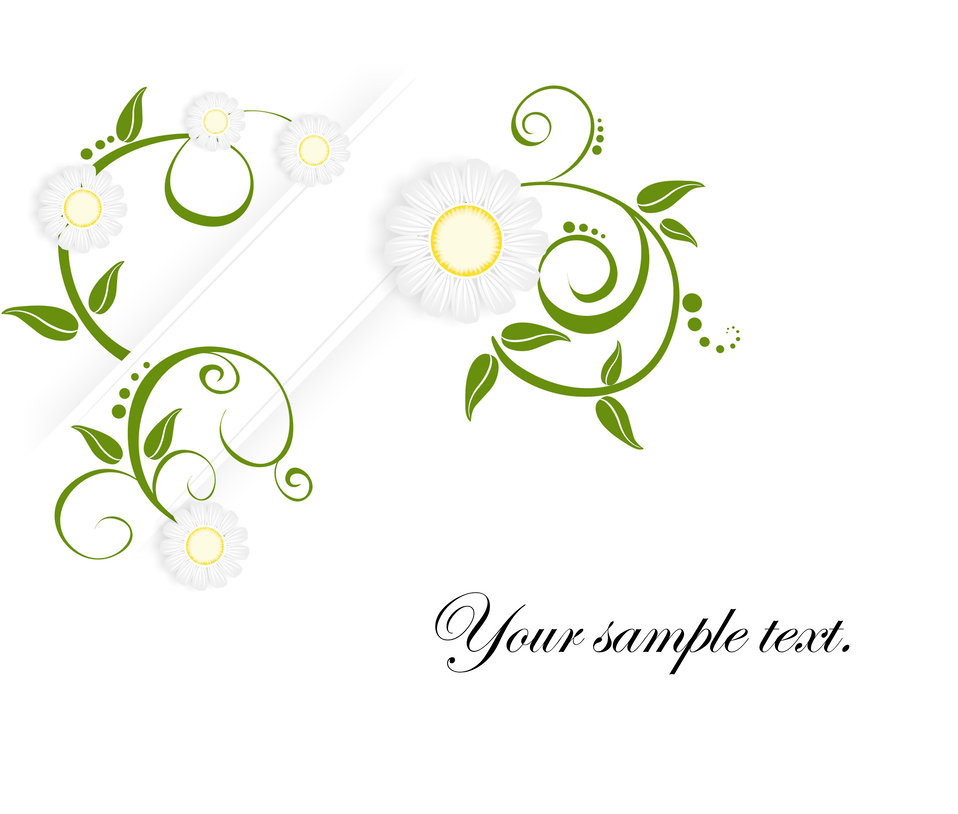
Background with flowers

Vector background for text with daisies.